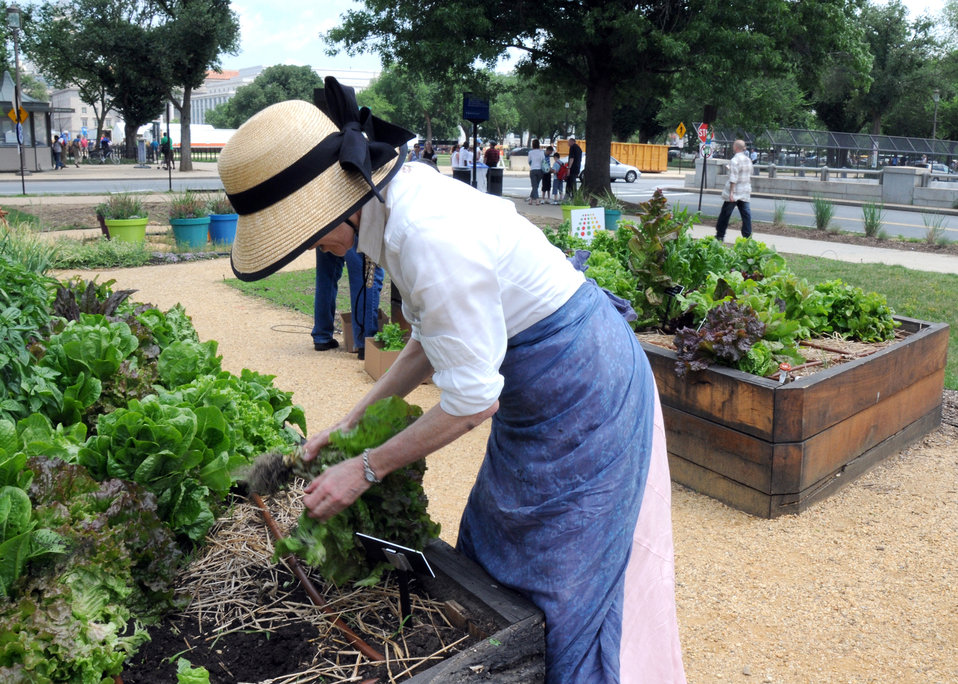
A U. S. Department of Agriculture (USDA) employee helps to harvest the first crop of lettuce from the USDA People’s Garden in Washington, DC, on Friday, May 28, 2010. All vegetables harvested are donated to local area food banks. USDA photo 10di1384-23.